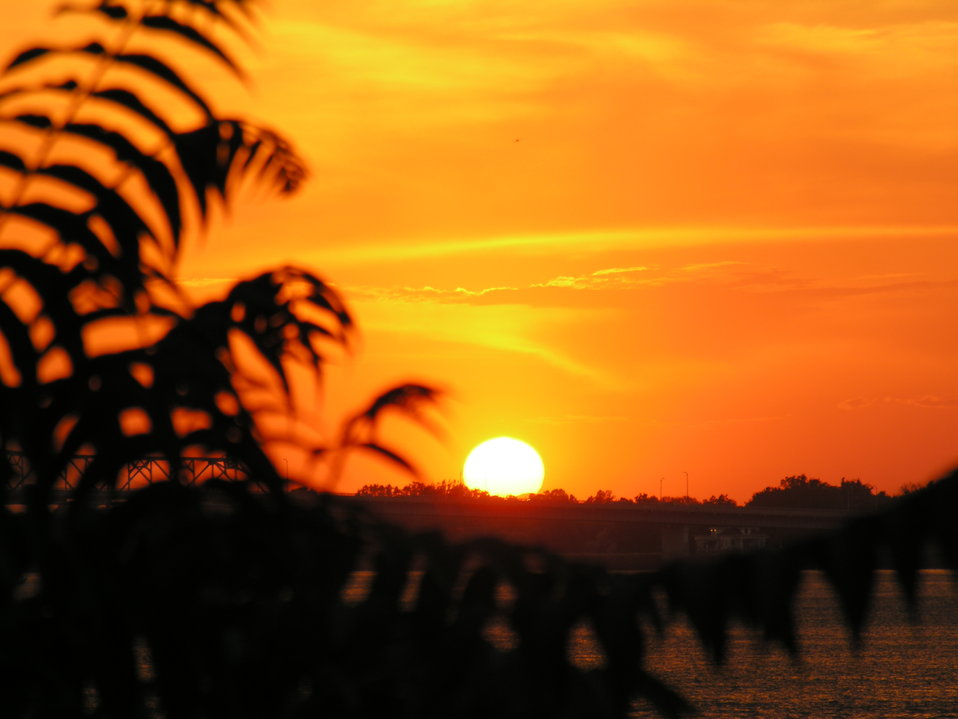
Richland, where the main campus of Pacific Northwest National Laboratory, enjoy 300 days of sunshine a year.